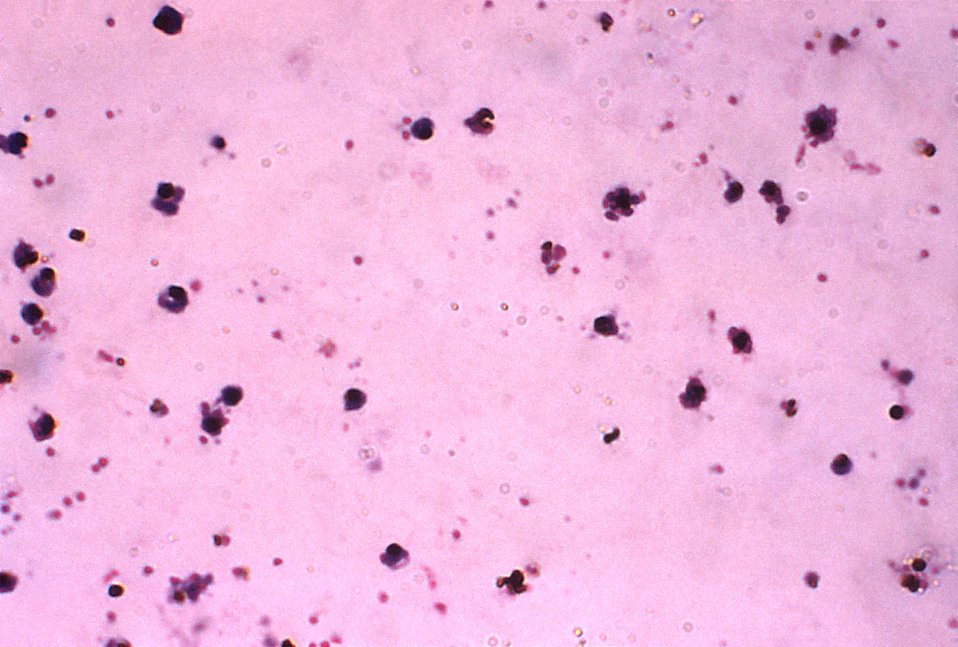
This thick film Aotus monkey blood smear reveals P. falciparum parasites after 72hrs of incubation using a Giemsa stain.